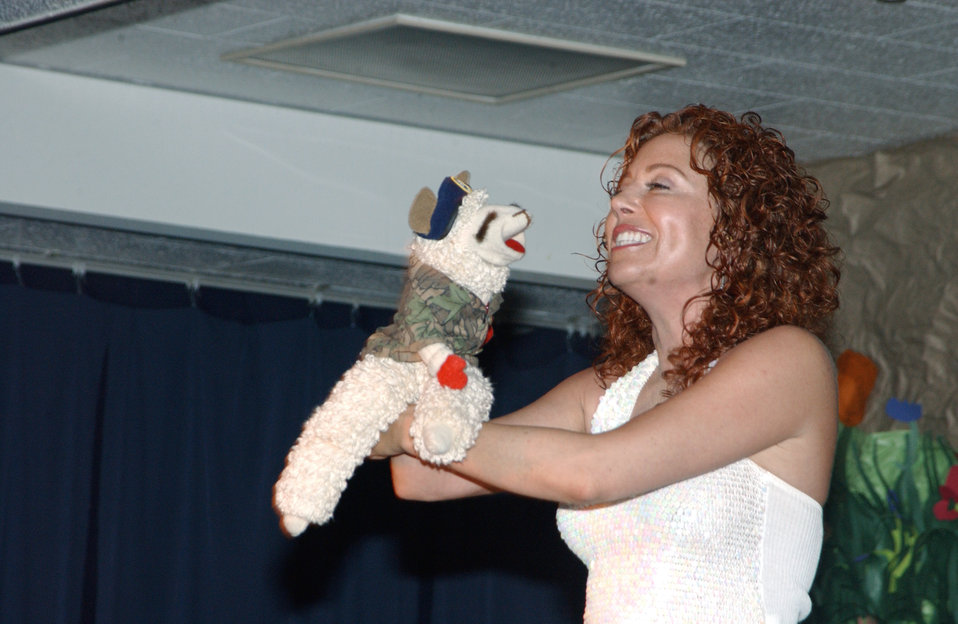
Lamb Chop visits Kadena

KADENA AIR BASE, Japan -- Mallory Lewis and Lamb Chop perform at Bob Hope Primary School here April 14. Lamb Chop sported a military uniform and security forces beret to show support to servicemembers. Ms. Lewis is the daughter of the late Shari Lewis who created the famous sock puppet.